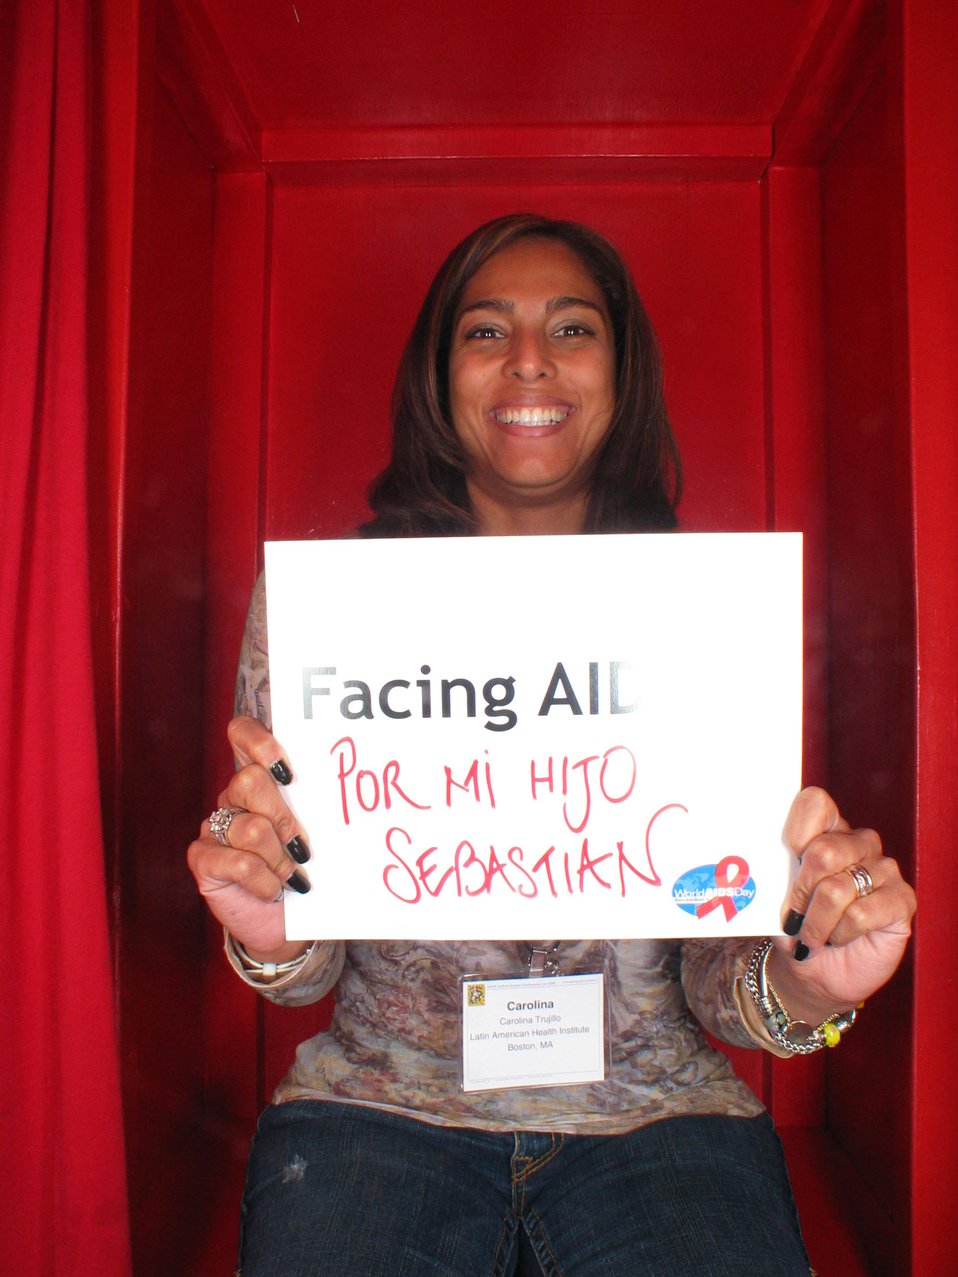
Facing AIDS por mi hijo Sebastian